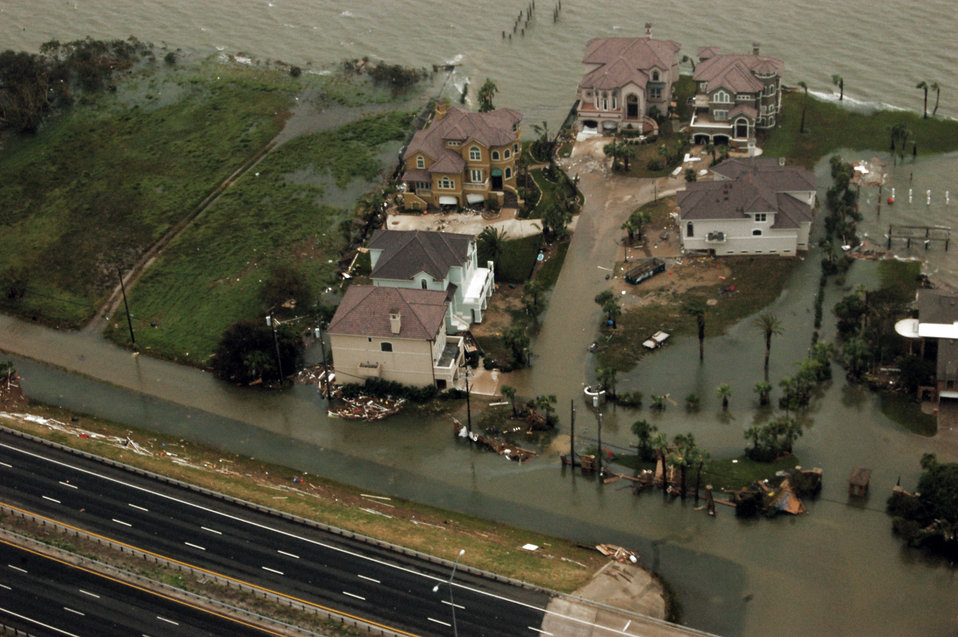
Airmen survey Ike damage

Airmen aboard an HH-60G Pave Hawk survey the damage caused by Hurricane Ike Sept. 13 around Galveston, Texas. Airmen from across the Air Force are deployed to the 331st Air Expeditionary Group at Randolph Air Force Base, Texas, to assist with rescue missions. Three HH-60Gs and two HC-130 Hercules aircraft from the 331st AEG flew over the devastated area to assist with relief operations.